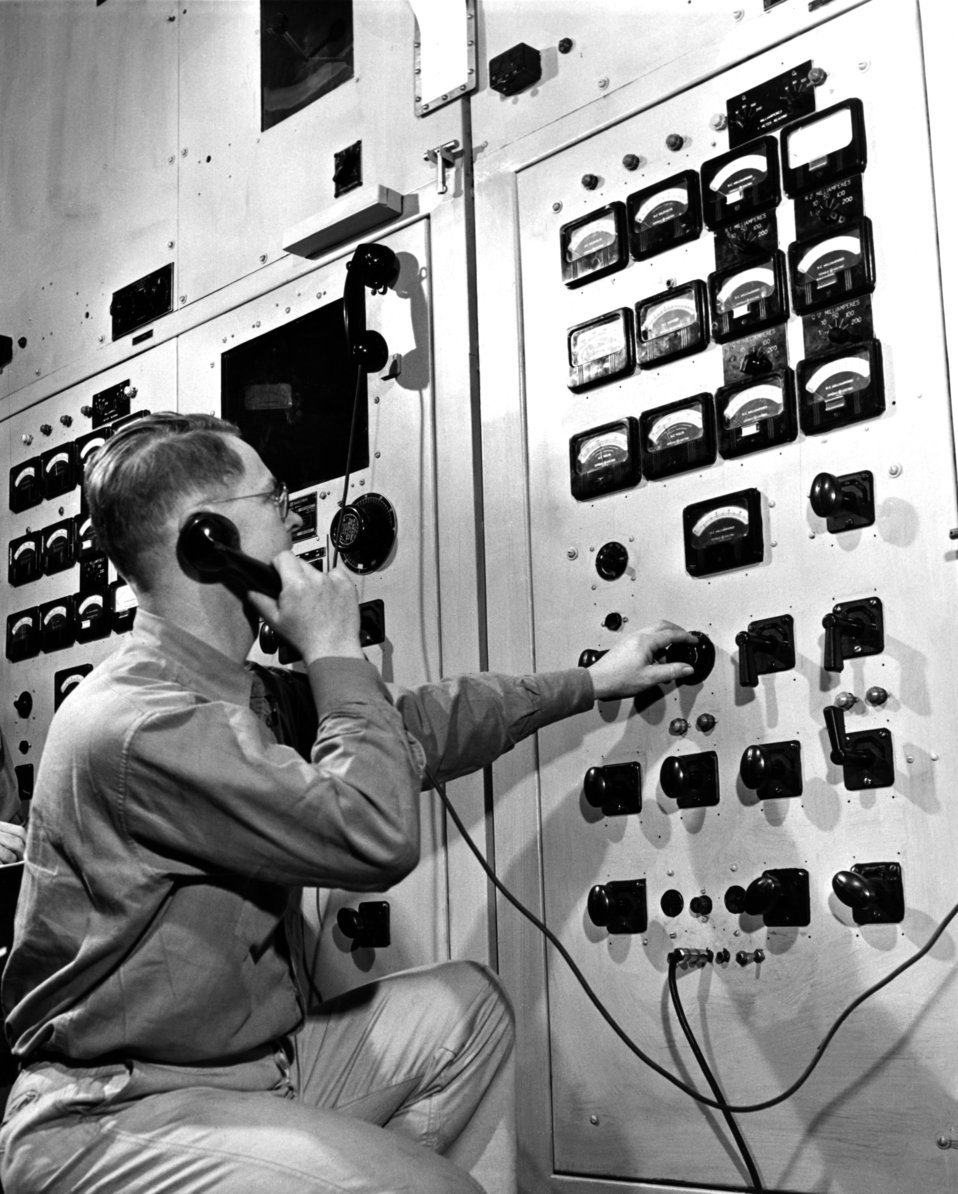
Stable Isotope Y-12 1948 Oak Ridge

4245-14 DOE photo Ed Westcott 1-15-1948 Oak Ridge Tennessee